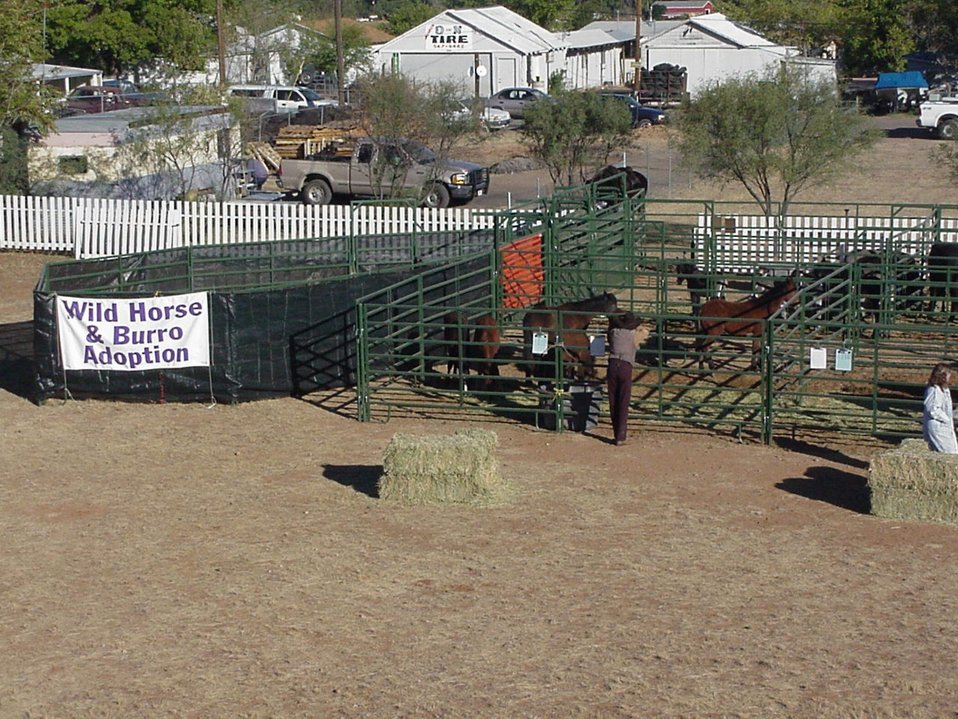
The new portable corrals at the Wild horse and Burro adoption in Camp Verde.